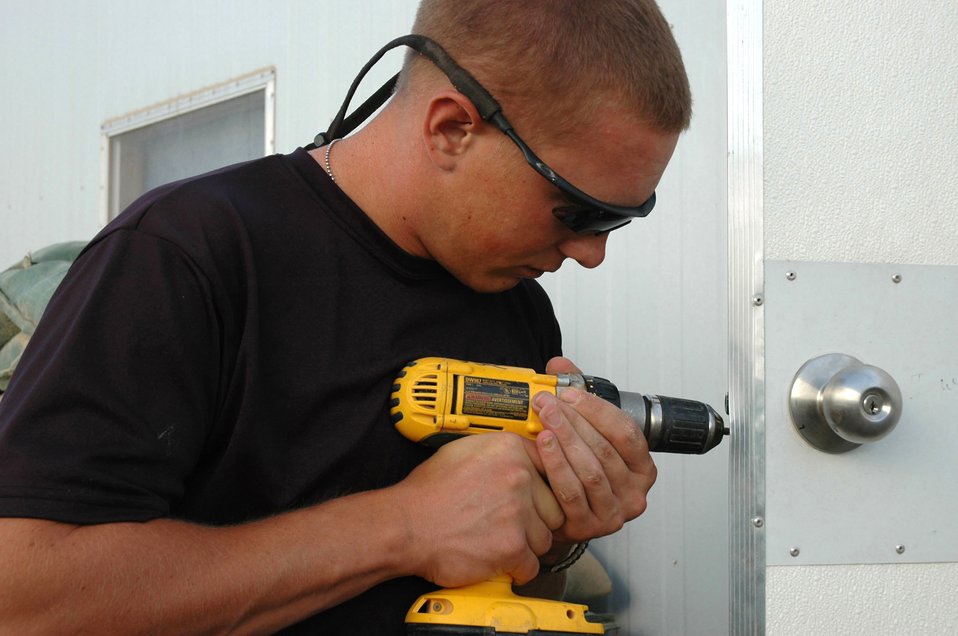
Civil engineer units have different missions, same goal

BALAD AIR BASE, Iraq -- Airman 1st Class Justin Jones works to improve the quality of life for people here. He is assigned to the 332nd Expeditionary Civil Engineer Squadron's equipment and pavements flight and is deployed from Shaw Air Force Base, S.C.